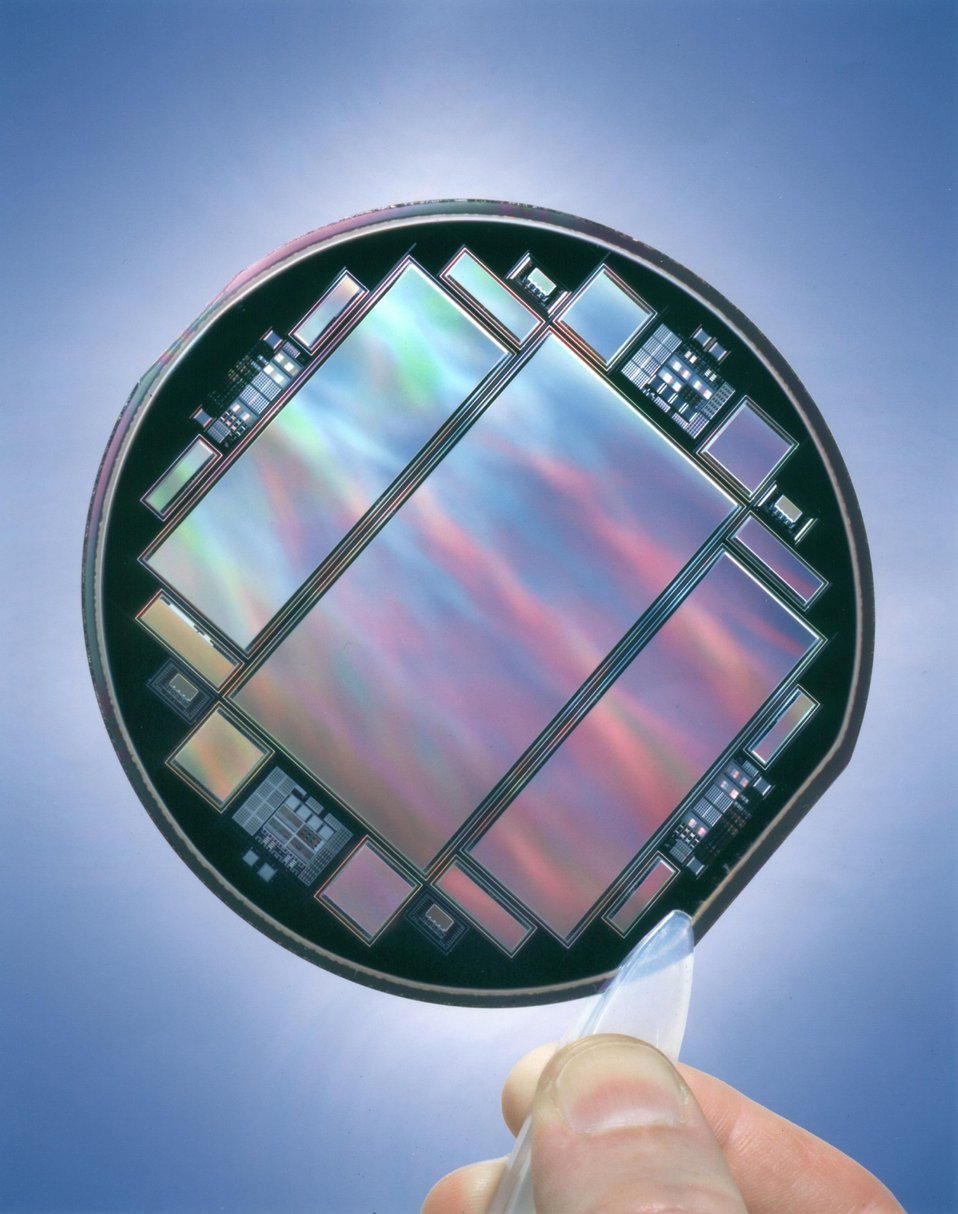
A 300-MICROMETER-THICK CHARGE-COUPLED DEVICE (CCD) WITH MORE THAN 21 MILLION PIXELS.

THIS 300-MICROMETER-THICK CCD IS BEING TESTED AT THE UNIVERSITY OF CA'S LICK OBSERVATORY. ASTRONOMICAL CCDS, MOST OF THEM THINNER THAN HUMAN HAIR, HAVE REPLACED PHOTOGRAPHIC PLATES. CCDS HAVE PROVEN TO BE UP TO 100 TIMES AS SENSITIVE AS PHOTO-EMULSIONS AND GIVE TELESCOPES POWER TO REACH DEEP INTO THE UNIVERSE. BERKELEY LAB RESEARCHERS CREATED ASTRONOMIC CCDS THAT ARE BOTH RUGGED AND SENSITIVE TO LIGHT, FROM X-RAYS TO THE NEAR INFRARED, WITH EXTREME EFFICIENCY AND LONG WAVELENGTHS.